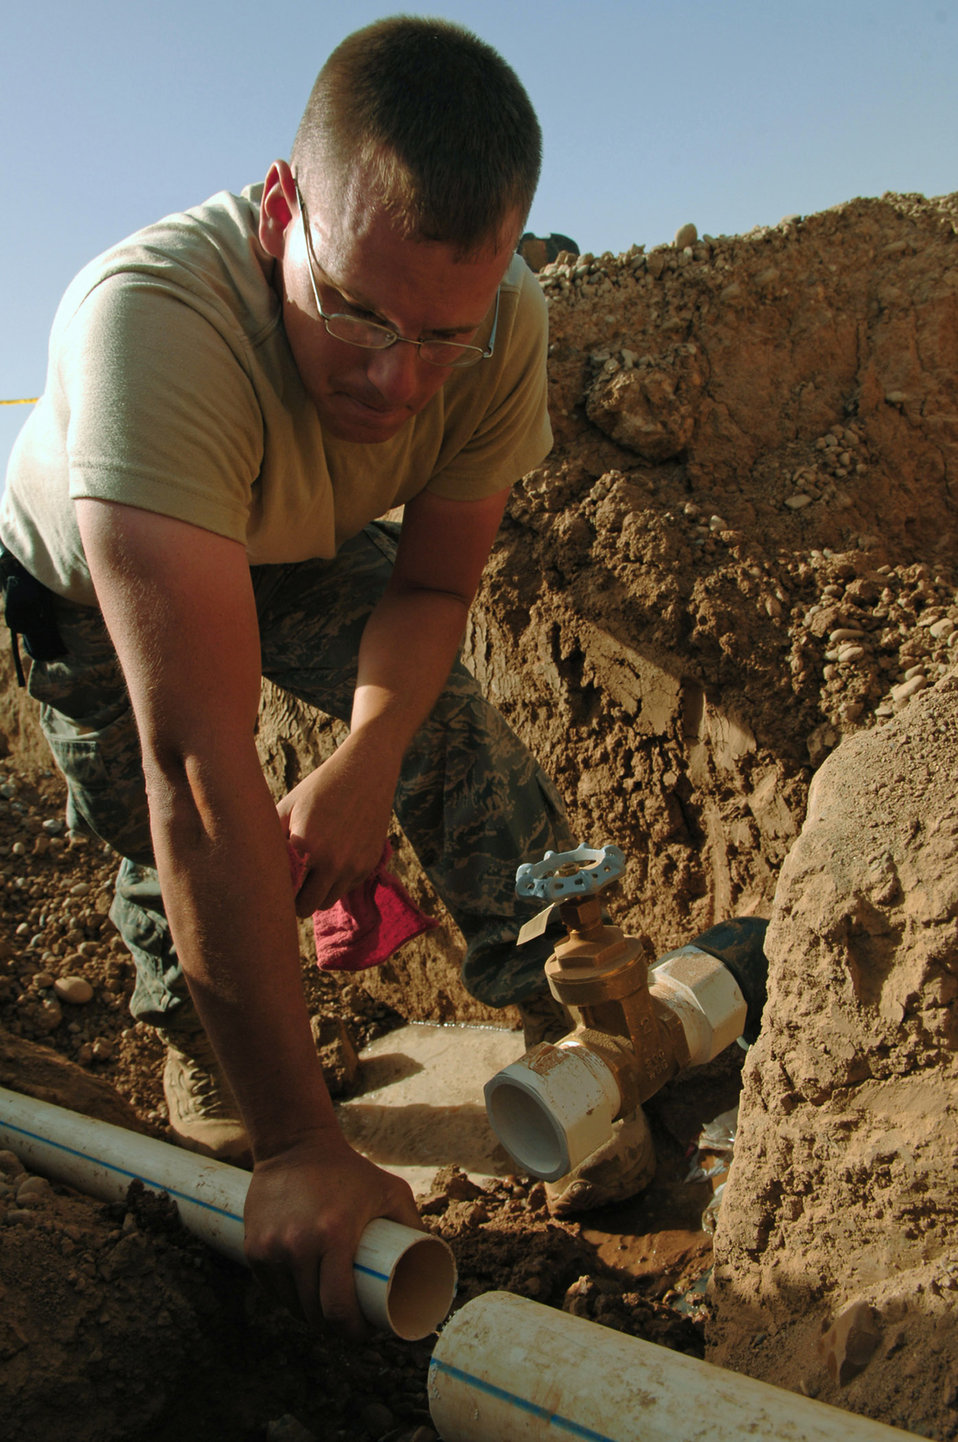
Water engineering

Staff Sgt. Kyle Mitchell drains stagnant water out of a water main before reattaching it to a valve March 24 at Balad Air Base, Iraq. The 332nd Civil Engineer Squadron plumbers have taken on a pipe infrastructure replacement project involving the removal of old pipes and replacing them with new, thicker gauge pipes that will bring the Air Force housing area to the next echelon of stability. The project is projected to be completed by mid-June. Sergeant Mitchell is a 332nd CES plumber deployed from Malmstrom Air Force Base, Mont.